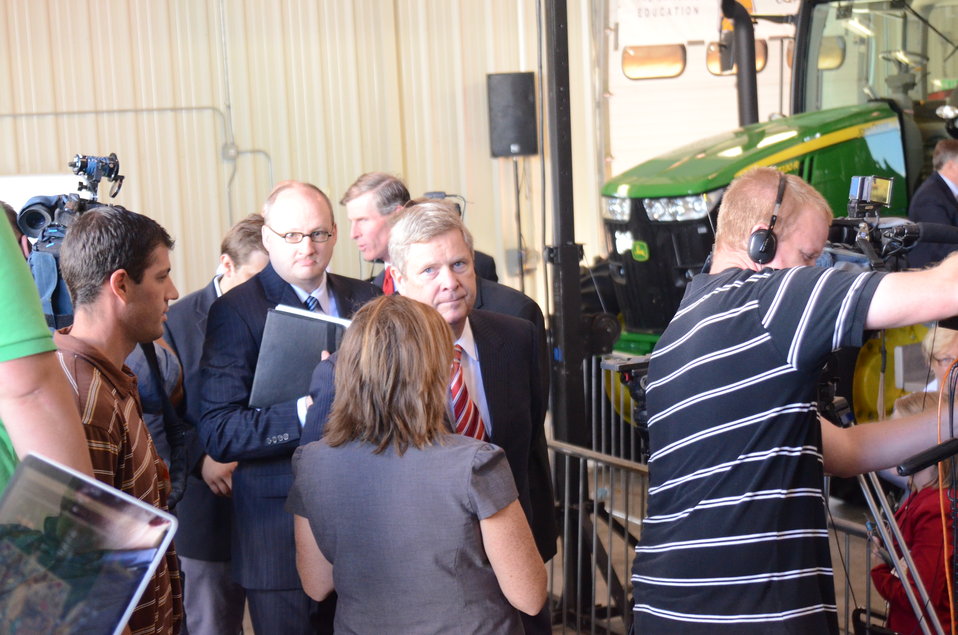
Agriculture Secretary and chair of the White House Rural Council Tom Vilsack at the Northeast Iowa Community College, IA, prior to the White House Rural Economic Forum, on Tuesday, Aug. 16, 2011.